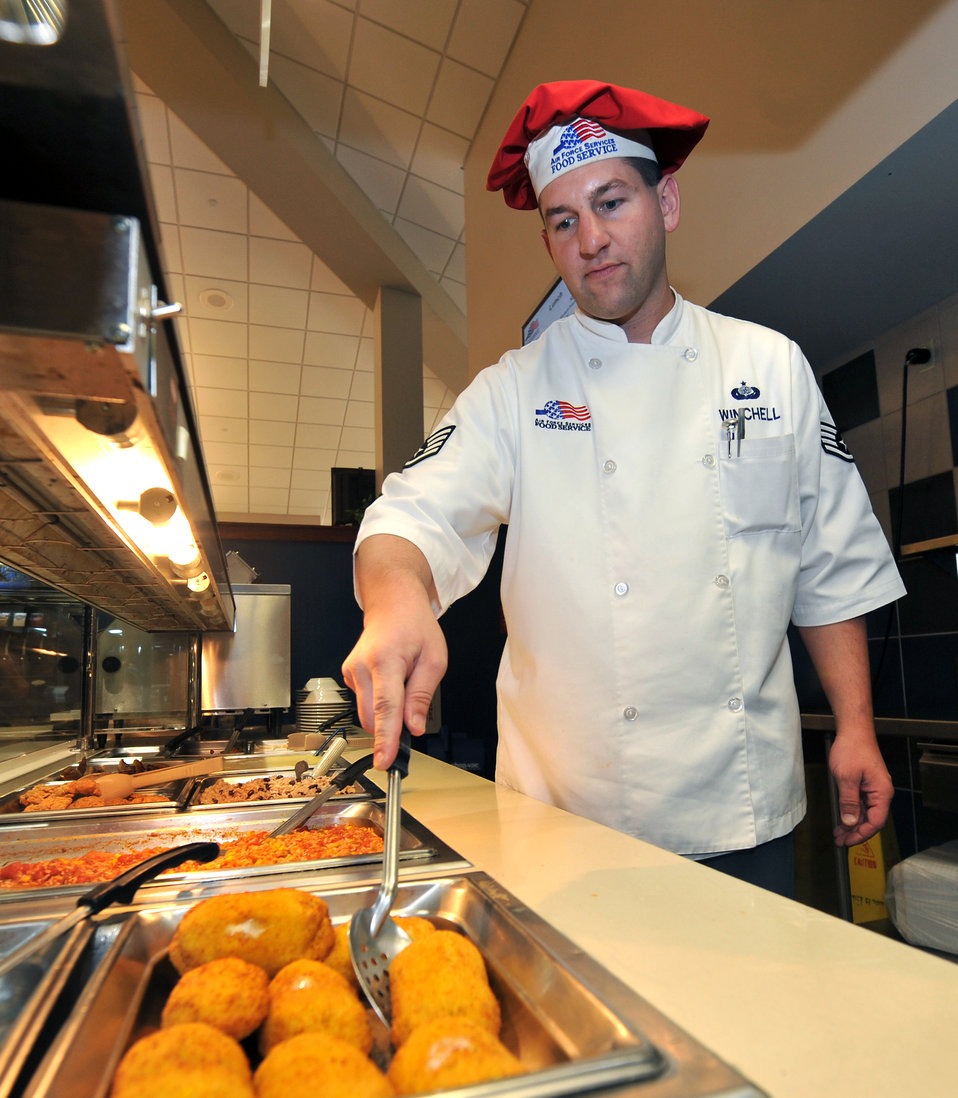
FTI continues to transform food delivery for Airmen

Tech. Sgt. David Winchell, a 19th Force Support Squadron dining facility shift leader, serves chicken cordon bleu Aug. 26, 2011, to Airmen at Little Rock Air Force Base, Ark. FTI continues to provide revamped menus, dining facility renovations and increased operating hours to FTI pilot installations.